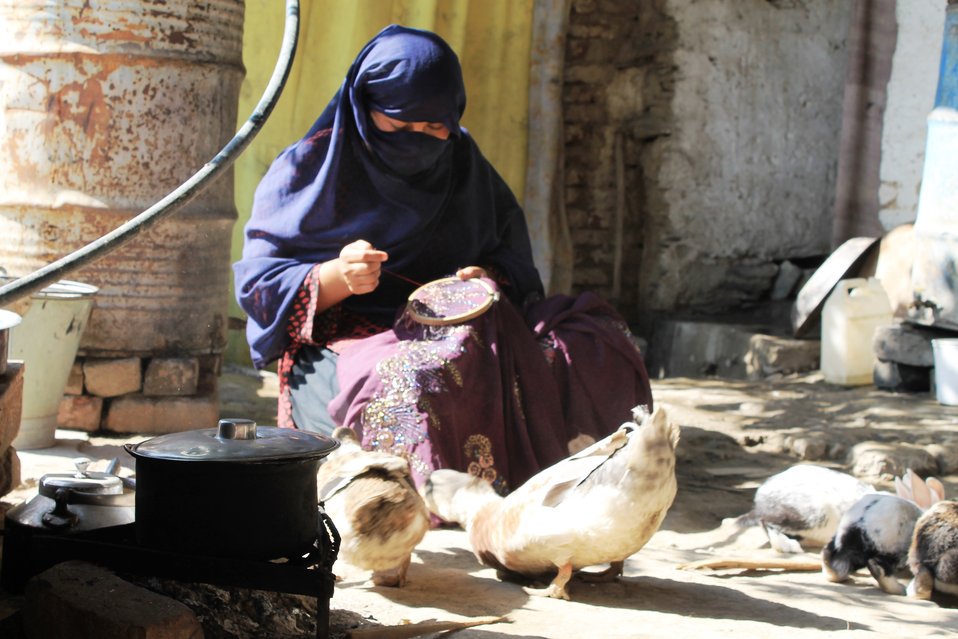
Embellished Fabrics Value Chain Development Initiative under the USAID's Entrepreneurs Project

Swat, October, 18, 2012: Naseem Akhtar, 25, represents the rural Swat where hand embellishment has a long tradition, wherein women, starting mostly as young as 10 or 12 years, stitch their way to adolescence, and adulthood. USAID is providing economic opportunities to 24,000 women embellishers in Pakistan through its Embellished Fabric Value Chain initiative under Entrepreneurs Project.